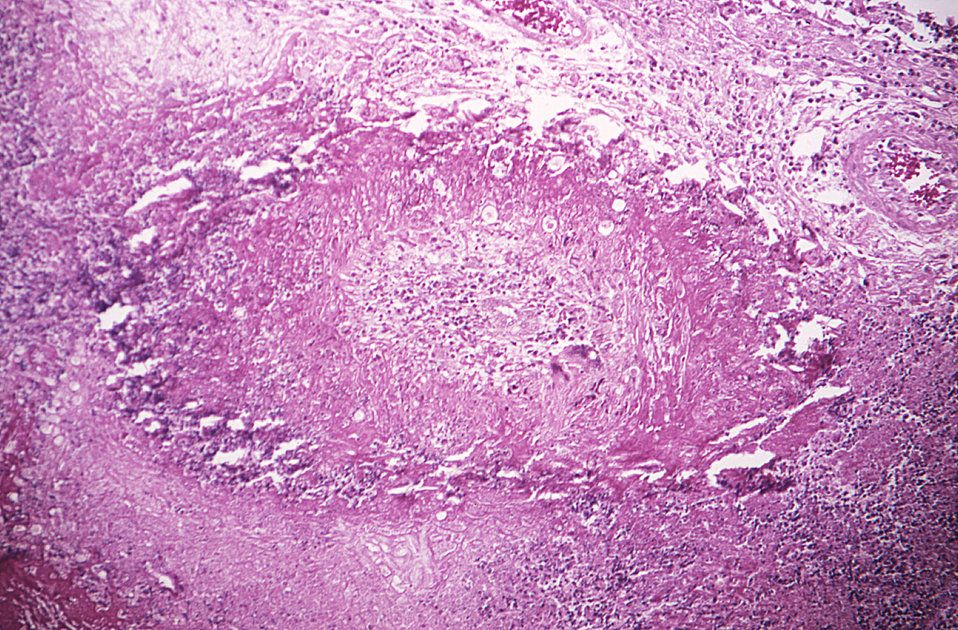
Under a relatively-low magnification of 95X, this photomicrograph of a brain tissue sample revealed some of the histopathologic changes associated with a tissue reation due to the presence of the fungus, Bipolaris hawaiiensis, formerly known as Drechslera hawaiiensis.